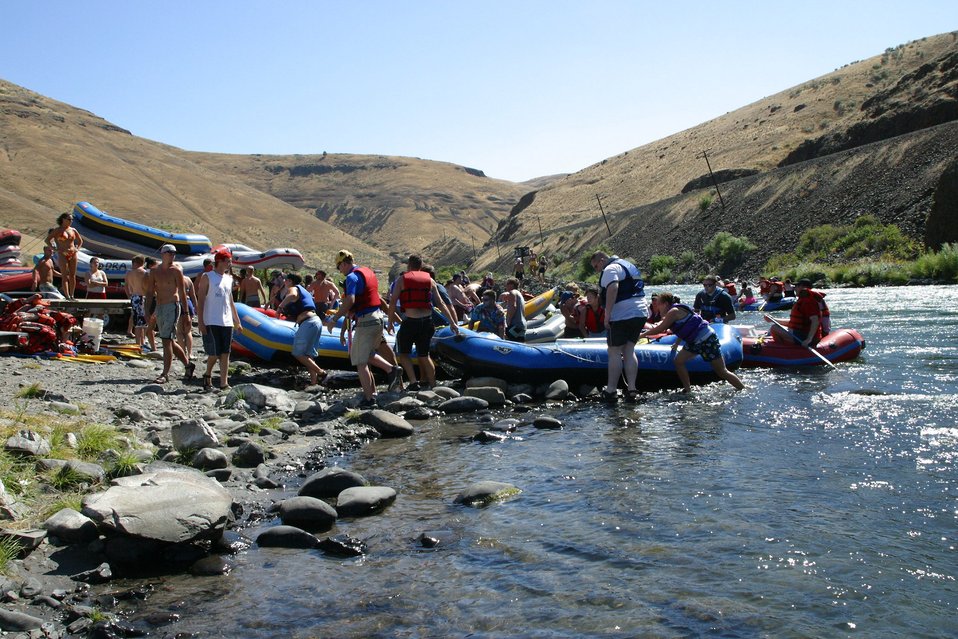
Sandy Beach is the last take out before Sherars Falls. All watercraft must exit the river!